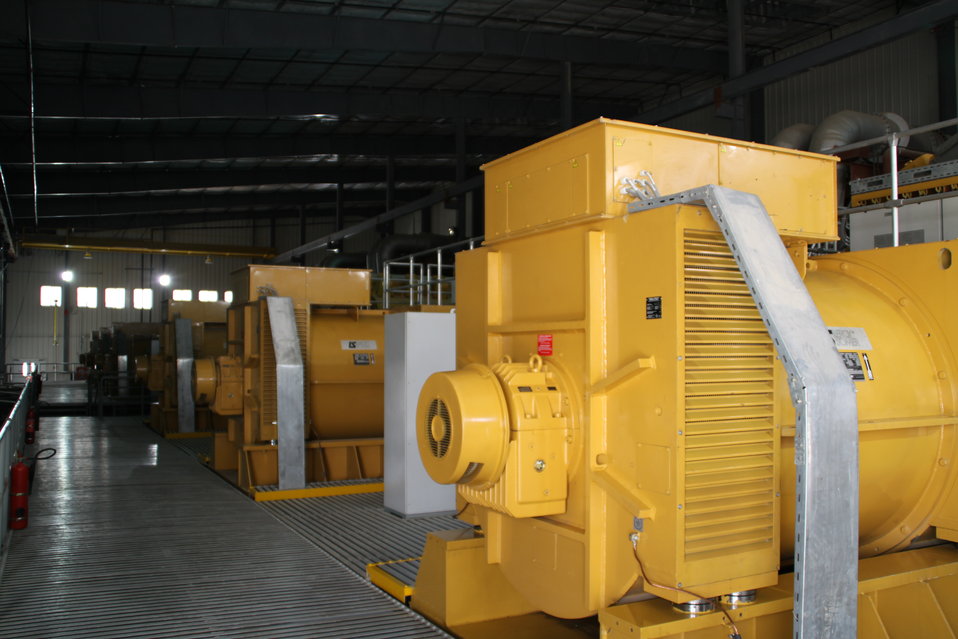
105 MW Tarakhil Power Plant Handover